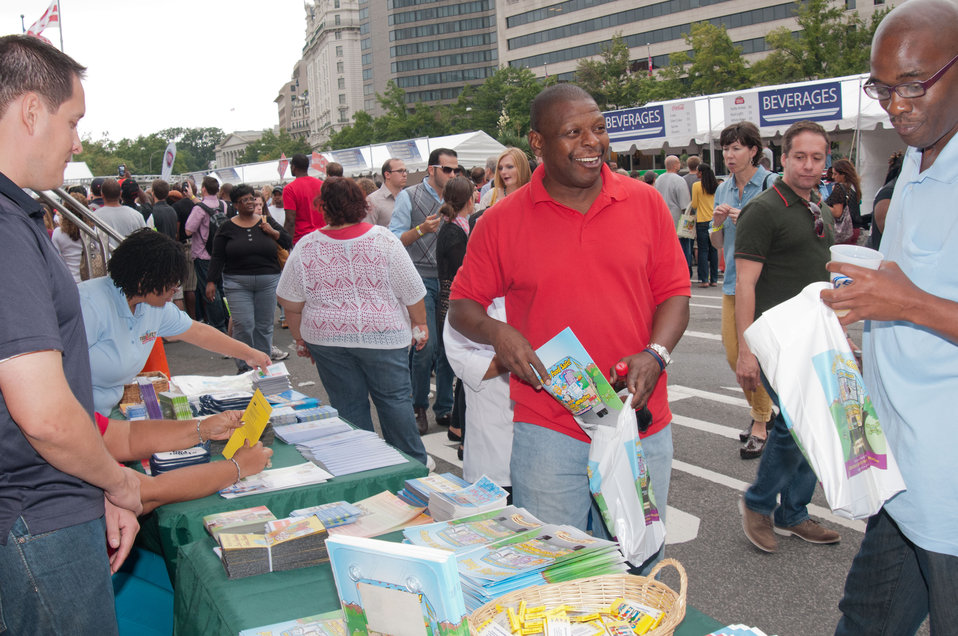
Outside Agriculture’s mobile Discovery Zone at the Taste of D.C., event, visitors pick up learning material for their children about maintaining safe food practices at home. For more information see www.fsis.usda.gov/foodsafetymobile/
The Taste of D.C., event highlights more than 70 eateries, 30 specialty beer providers, the United Service Organization (USO) Metropolitan Washington, and live bands. It is anticipated that more than 500,000 people will attend over the course of the three-day event, which extends from the White House to the Capitol, along Pennsylvania Ave. in Washington D.C. on Saturday, October 6, 2012. Agriculture Food Safety and Inspection Service specialists presented talks and cooking demonstrations.